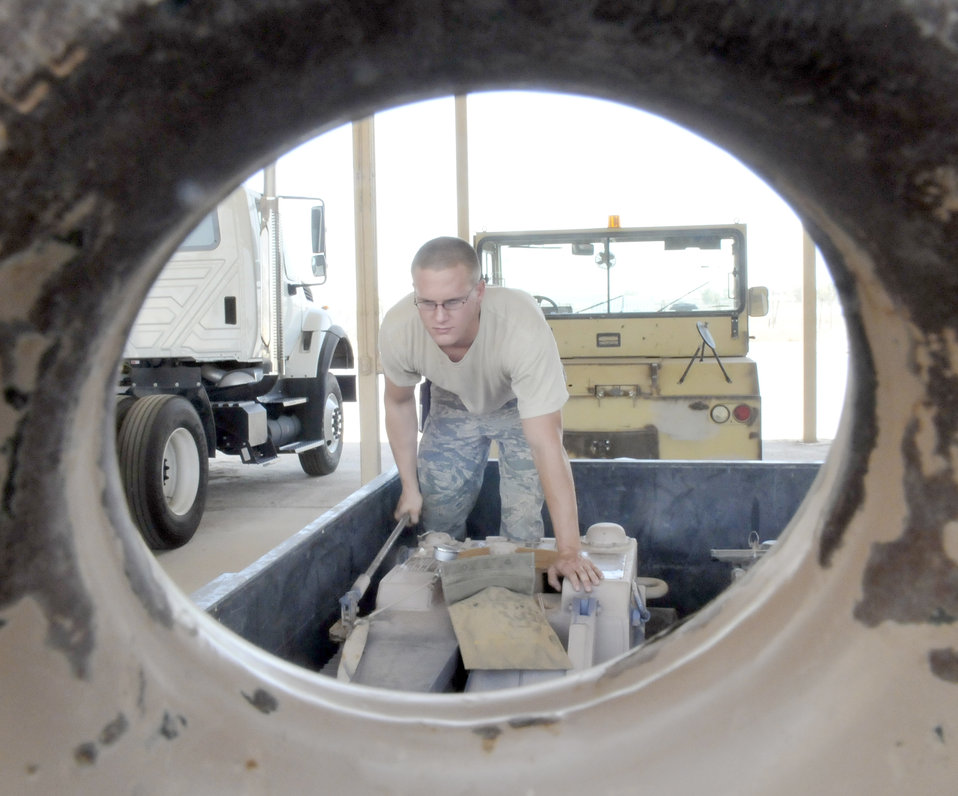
Crash recovery

Senior Airman William Davenport pumps a wheel skate assembly to ensure serviceability July 9, 2010, at Joint Base Balad, Iraq. Wheel skates are used to help tow damaged aircraft from the airfield. Airmen Davenport is a 332 Expeditionary Maintenance Squadron crash recovery, wheel and tire technician.